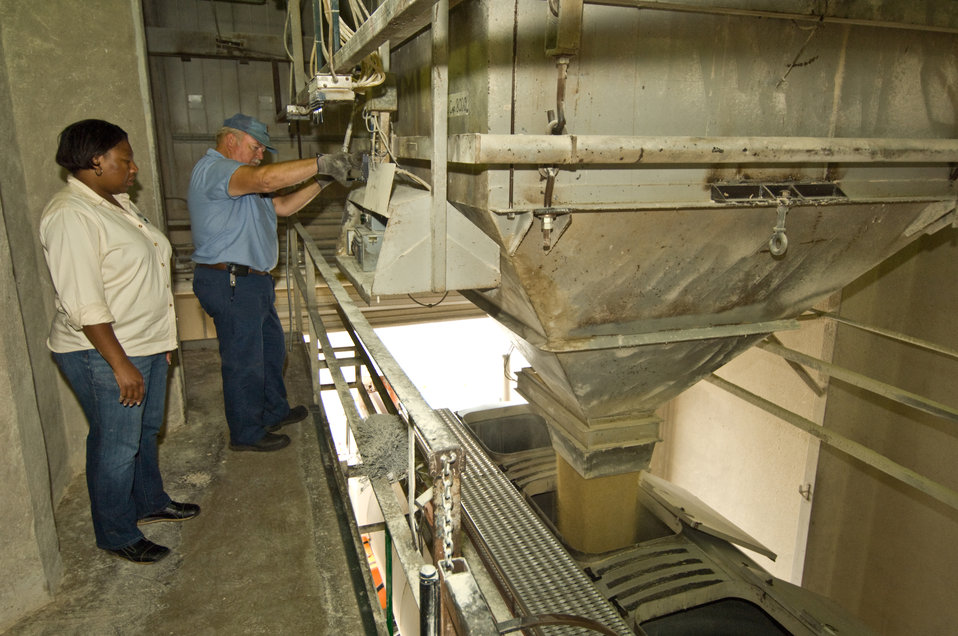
U.S. Department of Agriculture (USDA) Grain Inspection, Packers, and Stockyards Administration (GIPSA) resident agent Melba Twitty gains access to a scale indicator during the check weigh of a hopper scale used to weigh poultry feed in Paradise, Pennsylvania on July 22, 2008. GIPSA is a USDA agency that facilitates the marketing of livestock, poultry, meat, cereals, oilseeds, and related agricultural products, and promotes fair and competitive trading practices for the overall benefit of consumers and American agriculture.